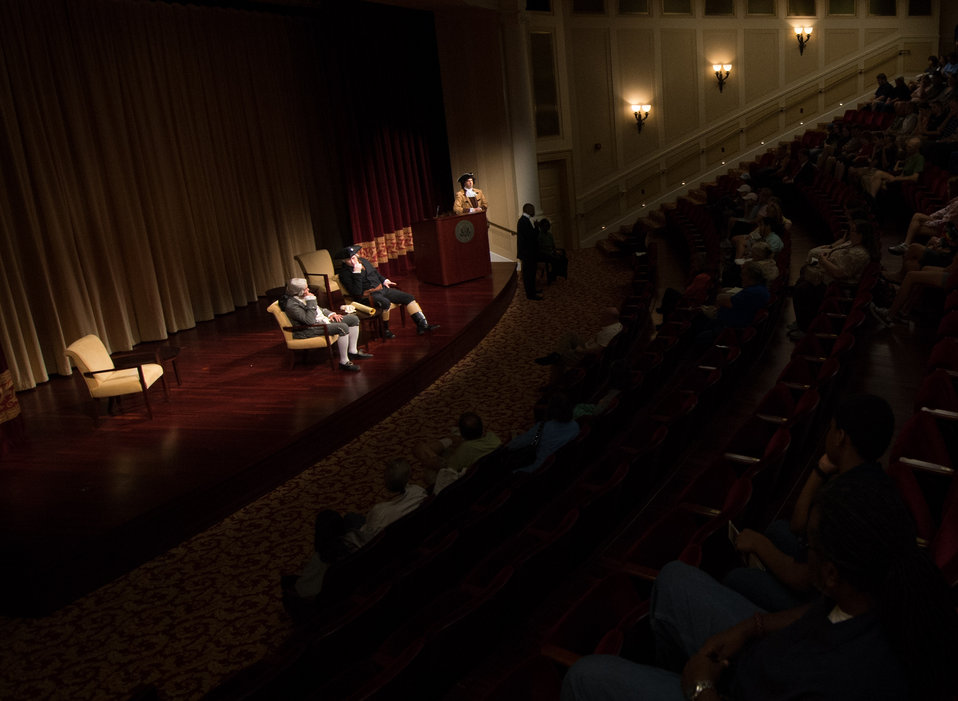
Constitutional Convention

The reenactors perform a short skit about the signing of the Constitution